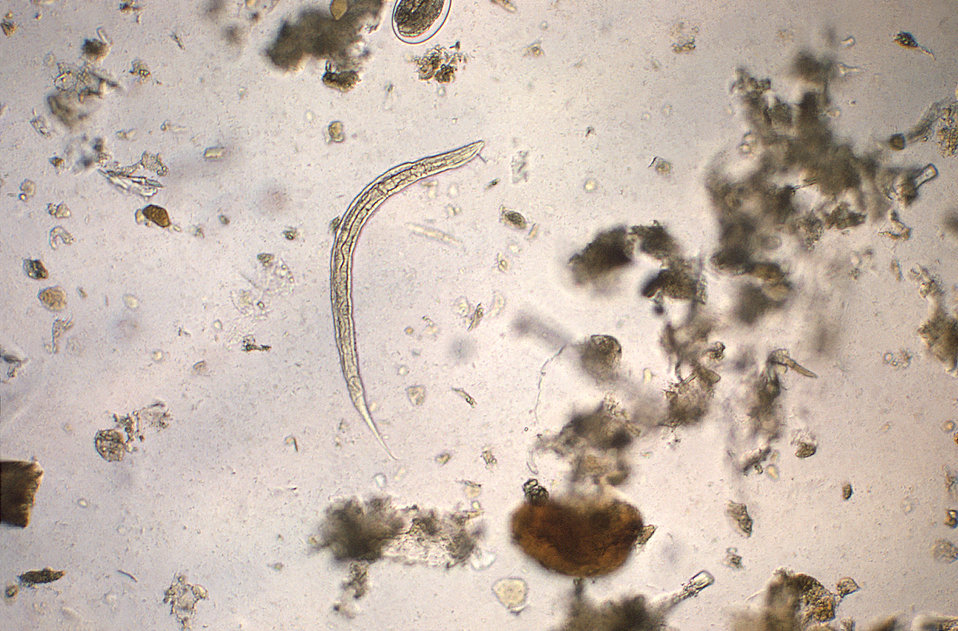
Under a magnification of 128X, this photomicrograph revealed some of the morphologic ultrastructure of a hookworm rhabditiform larva. Rhabditiform (L1) larvae that hatch from eggs are 250-300�m long, and approximately 15-20�m wide. They have a long buccal canal, and an inconspicuous genital primordium. Rhabditiform larvae are usually not found in stool, but may be found there is a delay in processing the stool specimen. If larvae are seen in stool, they must be differentiated from the L1 larvae of Stronyloides stercoralis.